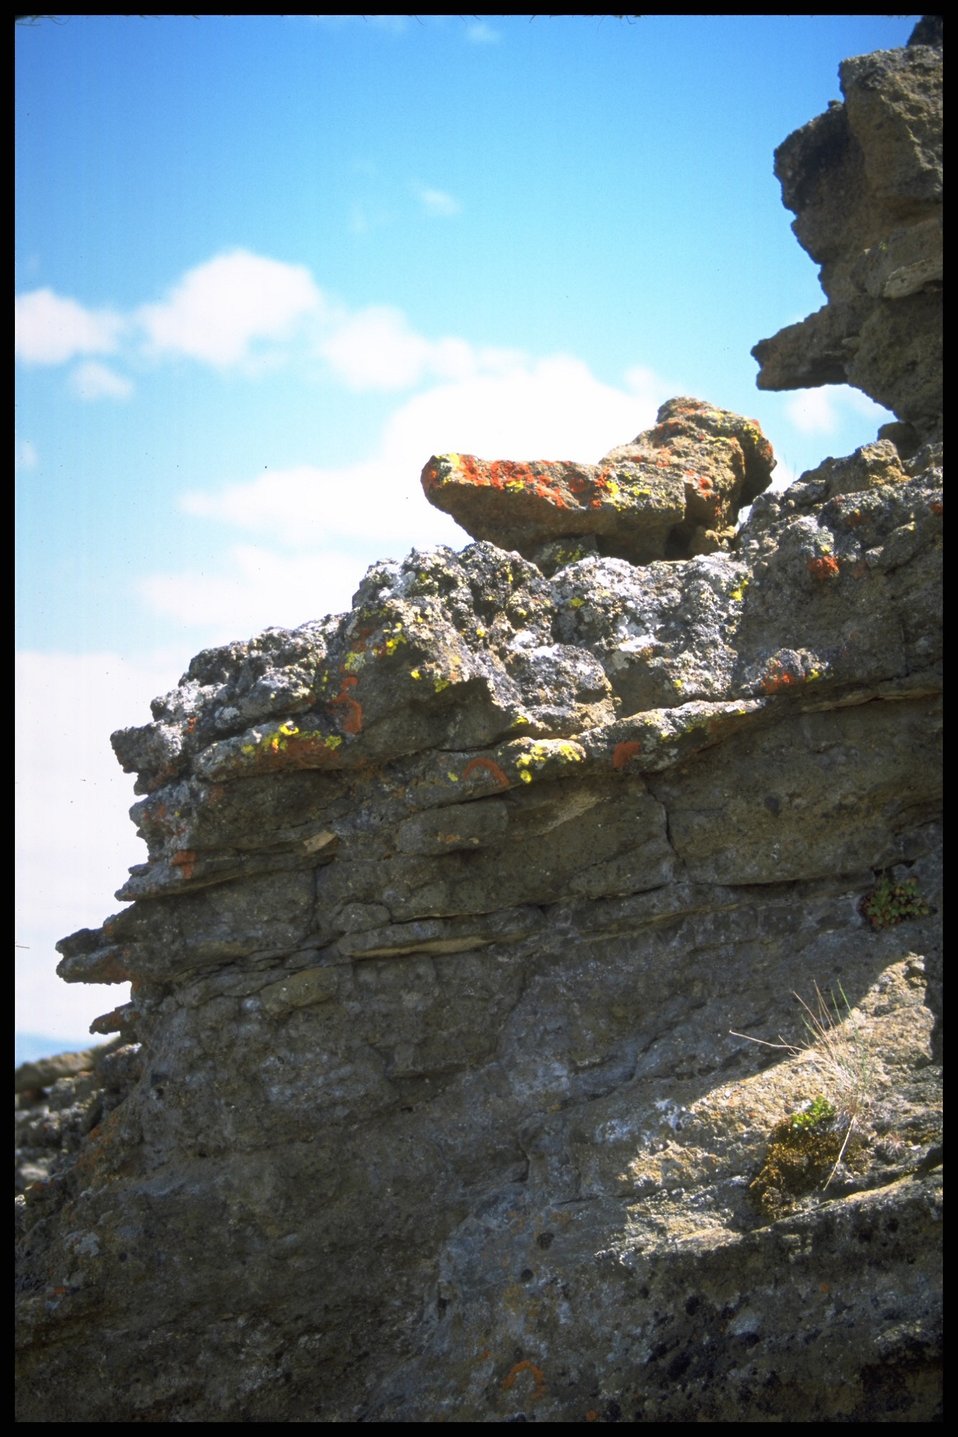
Ft. Rock, Lakeview District.